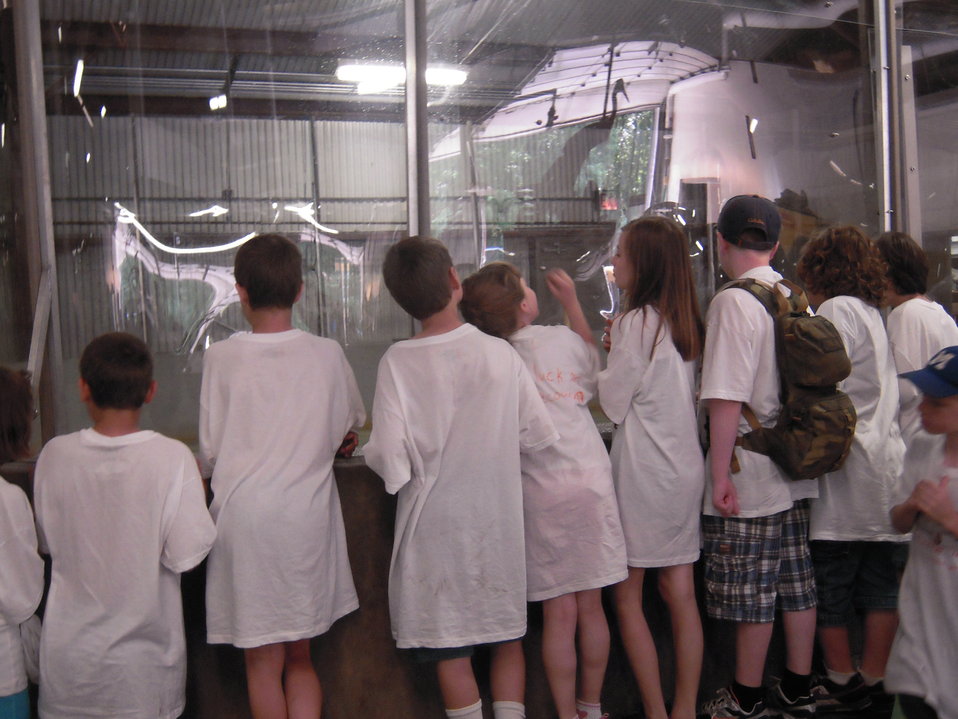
Kids looking at adult salmon in hatchery